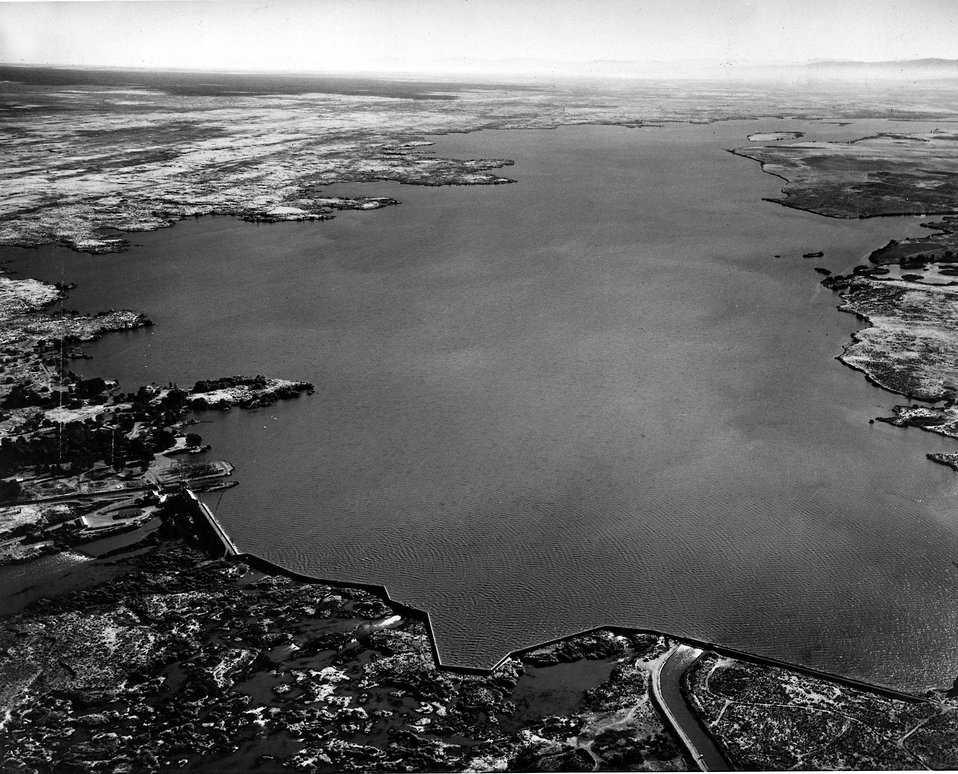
Minidoka Dam is a combined diversion, storage and power structure located on the Snake River in southern Idaho. c. 1980